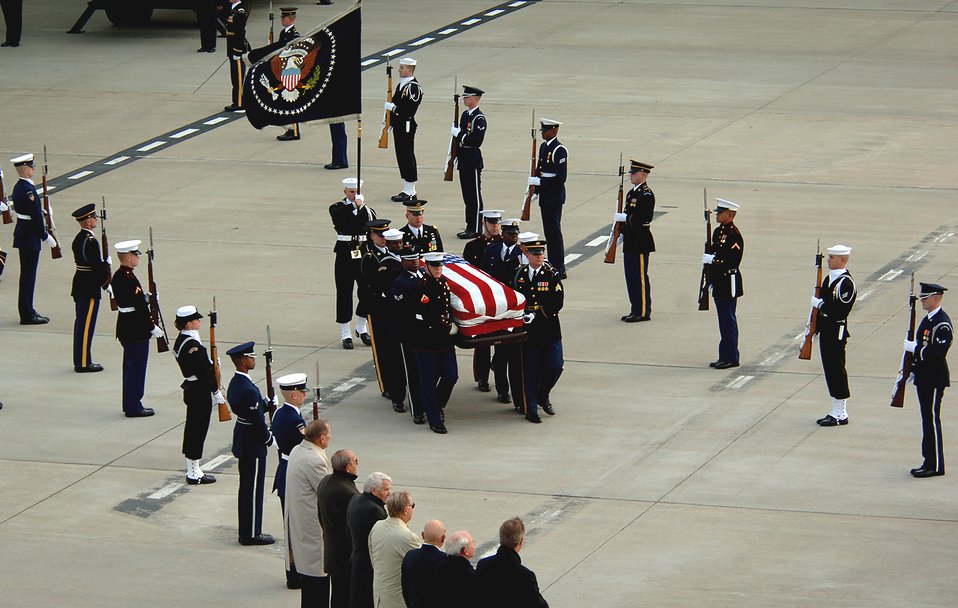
Back home in Michigan

Former President Gerald R. Ford's casket is carried from the aircraft by the Armed Forces Honor Guard after arriving Jan. 2 at the Gerald R. Ford International Airport in Grand Rapids, Mich.